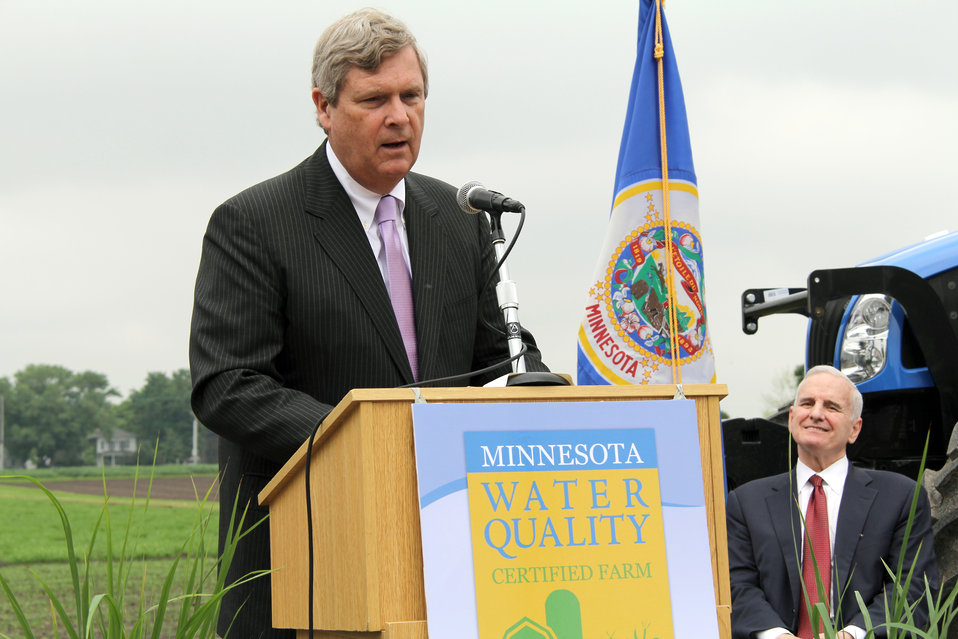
Agriculture Secretary Tom Vilsack announces the launch of the Minnesota Agricultural Water Quality Certification program at St. Paul University, St. Paul, MN on Monday, Jun. 10, 2013. This program is the first of its kind in the nation and is the product of a state-federal Memorandum of Understanding (MOU) signed by Minnesota Governor Dayton, Agriculture Secretary Vilsack and former Environmental Protection Agency (EPA) Administrator Lisa Jackson in January 2012.